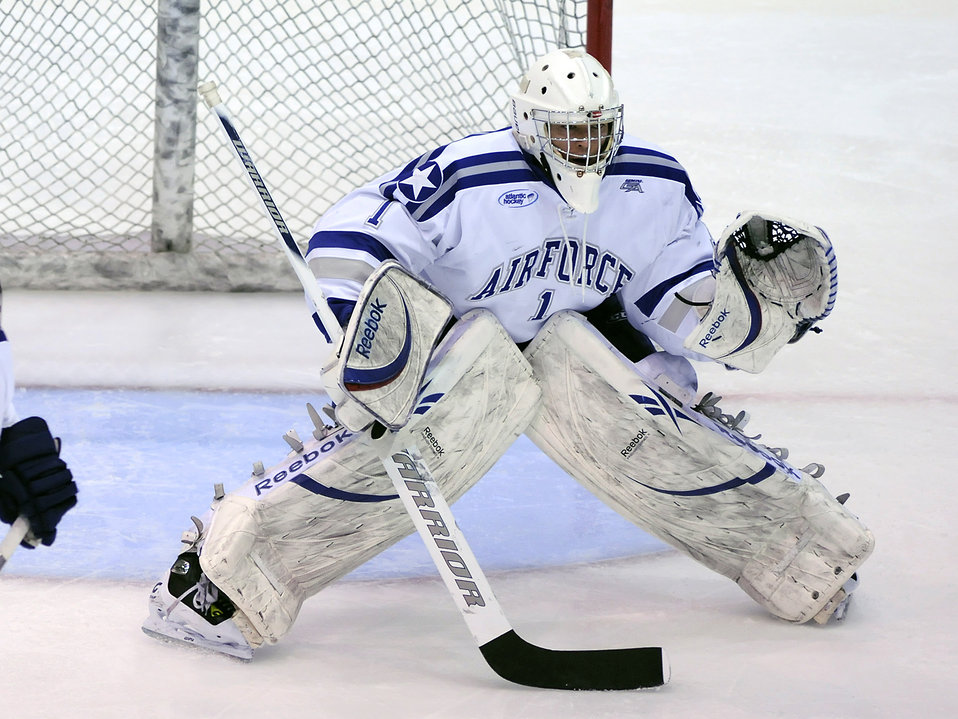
Falcons hockey team beats Pioneers

In his last regular-season game, Falcon senior goalie Andrew Volkening guards the goal as the Falcons beat the Sacred Heart Pioneers 8-1 at the U.S. Air Force Academy's Cadet Ice Arena Feb. 27, 2010. The victory clinched third place in the Atlantic Hockey Association, improving to 14-14-6 overall and 14-8-6 in the AHA.